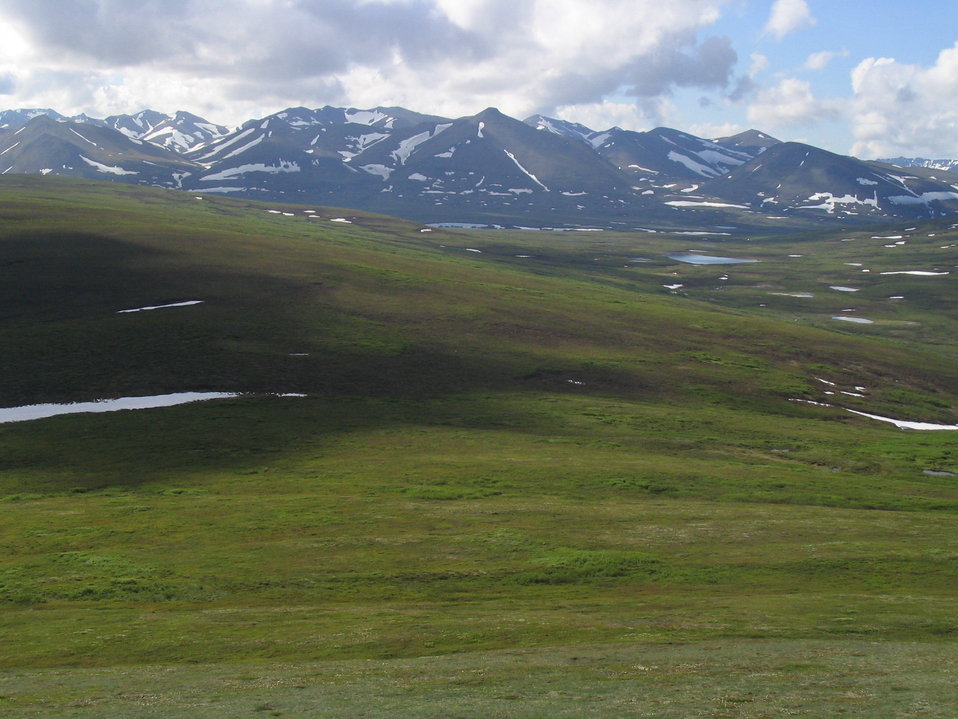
One of gyrfalcon survey sites

In 2004 a multi-year research project was initiated investigating Gyrfalcons within the YDNWR.

USFWS Yukon Delta NWR